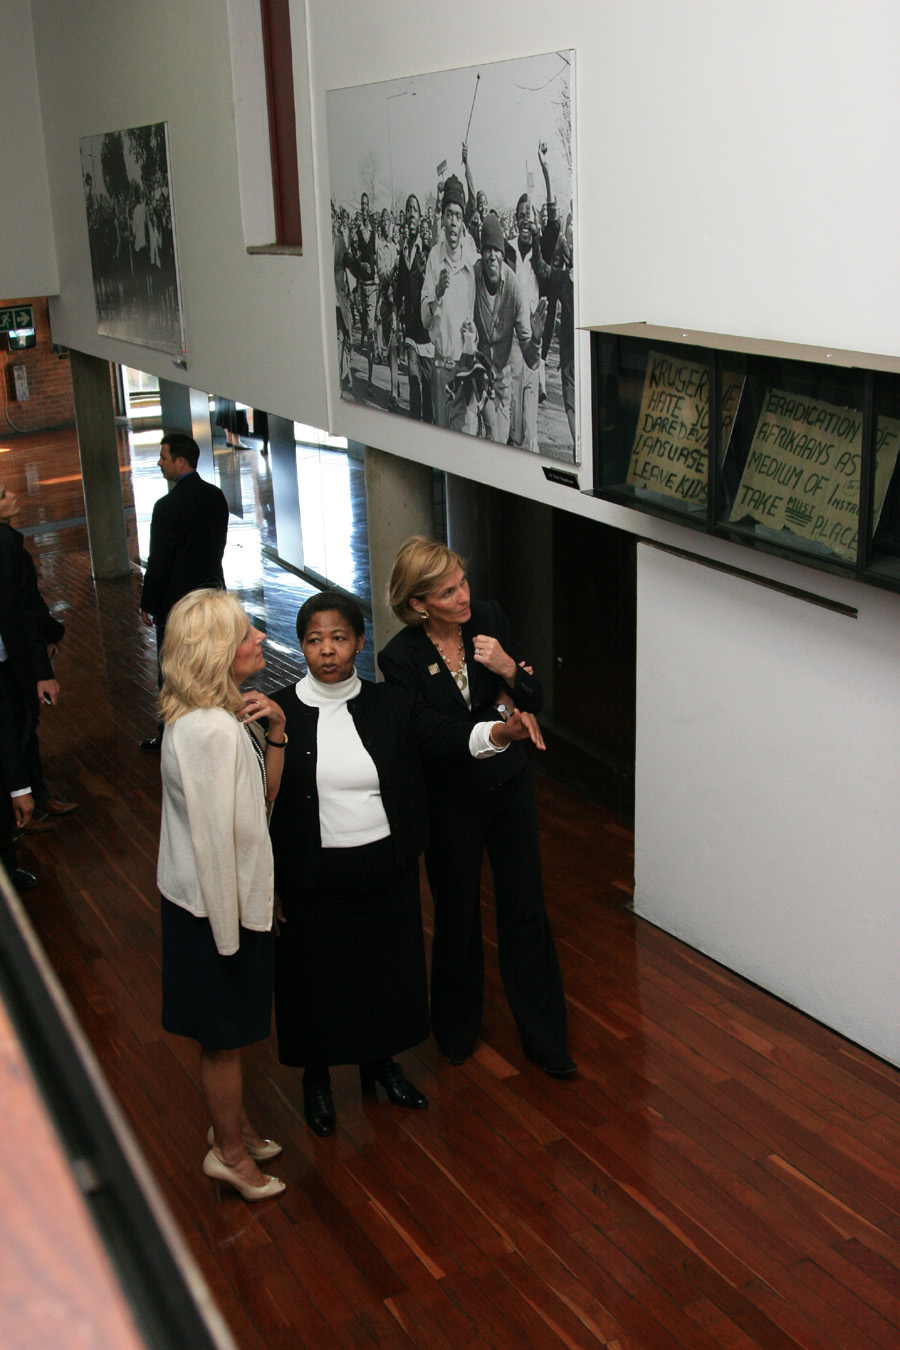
Dr. Jill Biden and Liz Berry Gips Visit Hector Pieterson Museum

Dr. Jill Biden, wife of Vice President Joseph Biden, and Liz Berry Gips, wife of U.S. Ambassador to South Africa Donald H. Gips, visit the Hector Pieterson Museum in Soweto, South Africa, on June 12, 2010.